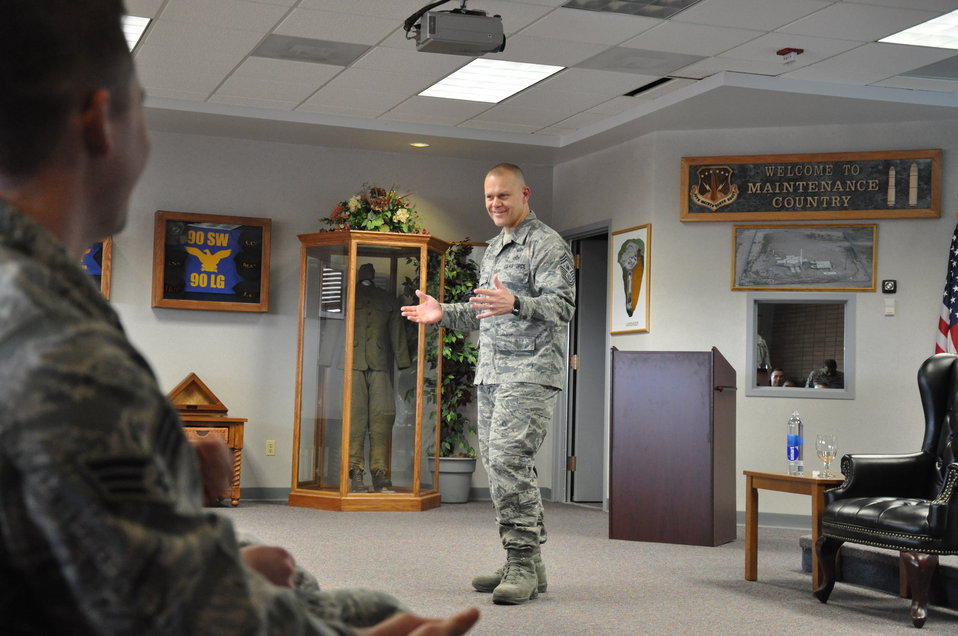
Chief Roy visits F.E. Warren Air Force Base

Chief Master Sgt. of the Air Force James Roy speaks with Airmen attending the Airmen Leadership School and the First Term Airmen's Center March 2, 2011, at F.E. Warren Air Force Base, Wyo.